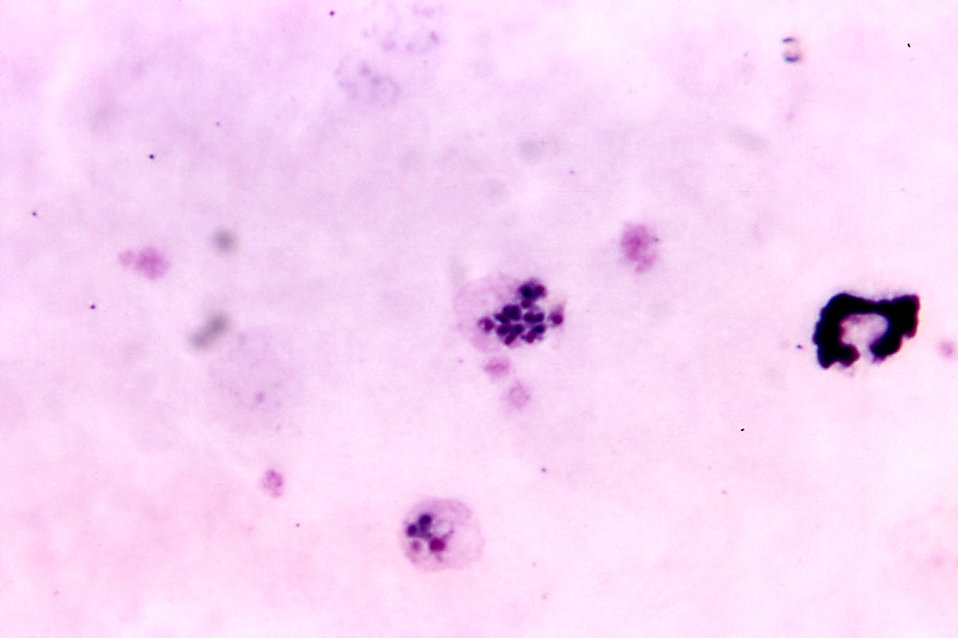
This micrograph of a thick film depicts a mature schizont of a P. vivax parasite using Giemsa stain; Magnification 1125x.